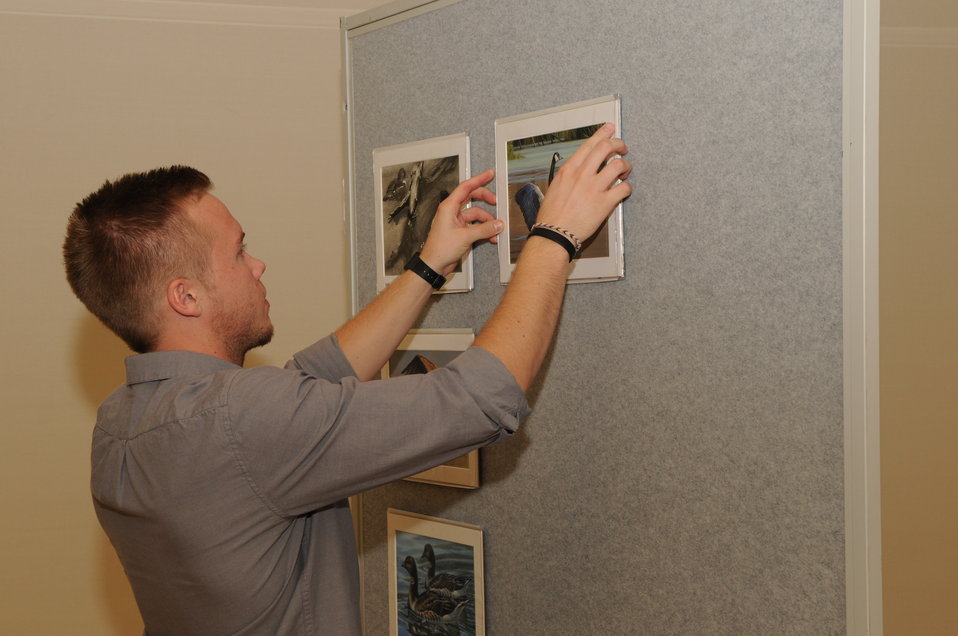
Artwork Hanging

The U.S. Fish & Wildlife Service sponsored the 2012 Federal Duck Stamp Art Contest September 28 and 29 in Ogden, Utah, at Weber State University. A panel of five judges was responsible for choosing the art work used to design the 2013-2014 Migratory Bird Hunting and Conservation Stamp.